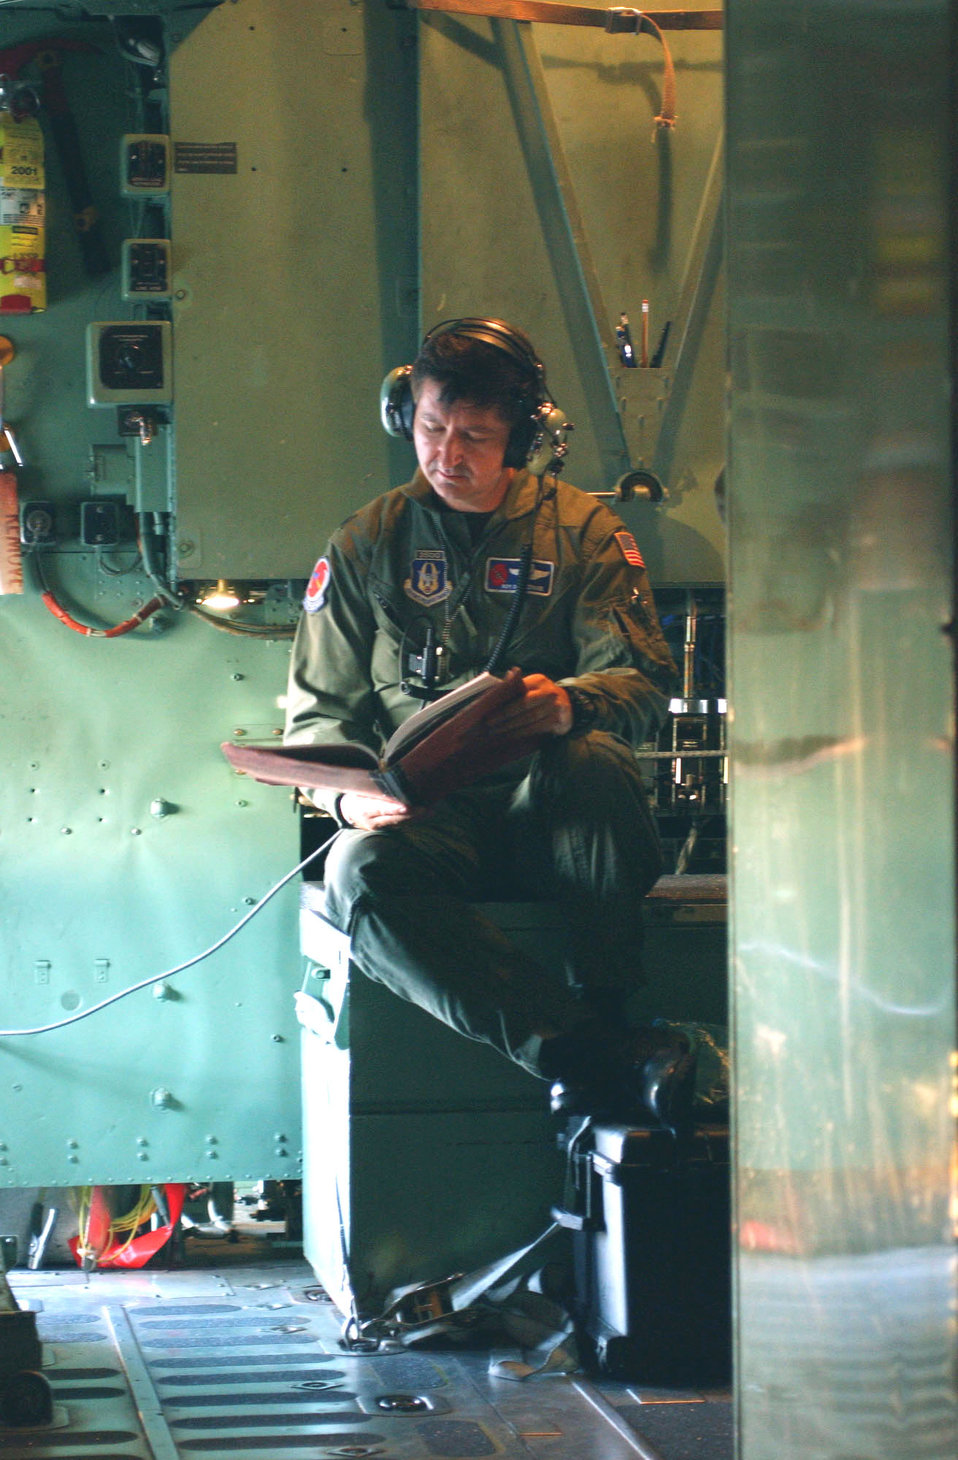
Hurricane Charley

KEESLER AIR FORCE BASE, Miss. -- Lt. Col. Roy Deatherage reviews the flight plan just before leaving for a 12-hour mission into Hurricane Charley. He is a 13-year weather instructor with the 53rd Weather Reconnaissance Squadron, better known as the